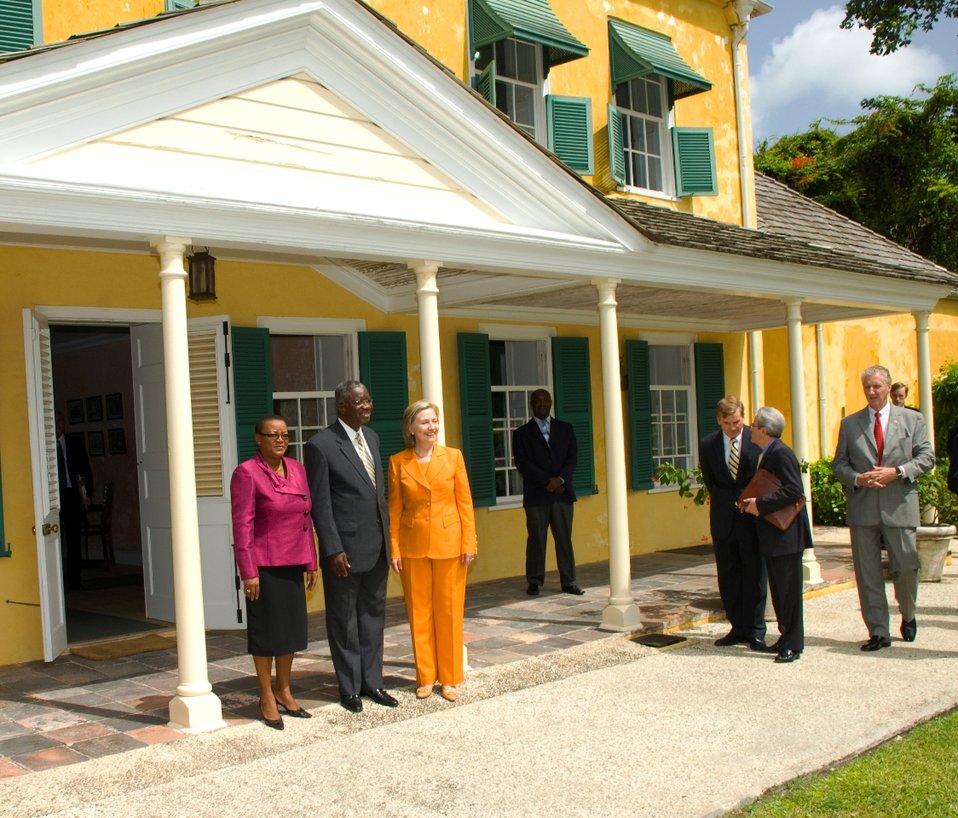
Secretary Clinton With Barbadian Minister of Foreign Affairs Maxine McClean and Barbadian Acting Prime Minister Freundel Stuart

U.S. Secretary of State Hillary Rodham Clinton, right, poses for a picture with Barbadian Minister of Foreign Affairs Maxine McClean, left, and Barbadian Acting Prime Minister Freundel Stuart, right, during a visit to the restored George Washington House in St. Michael Parish, outside Bridgetown, Barbados, on June 10, 2010.